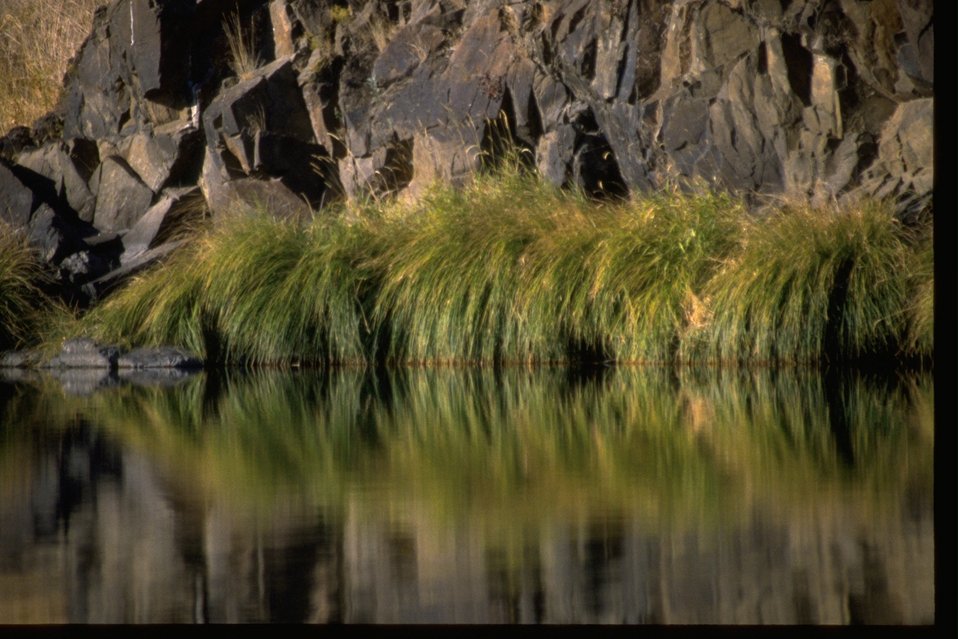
Riparian vegetation along the bank of the John Day River, near Bridge Creek.